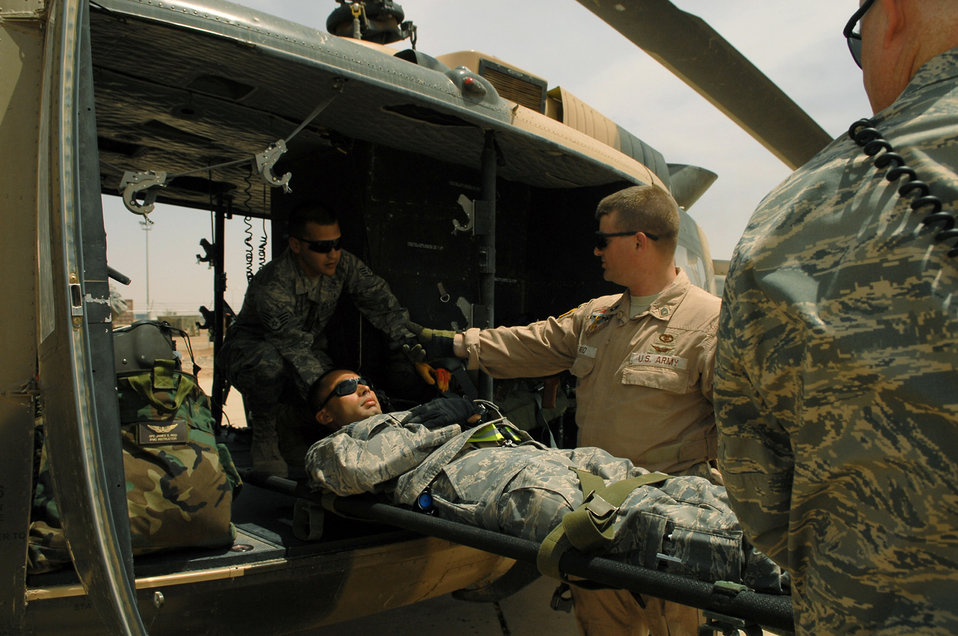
Iraqi air force performs medical evacuation

Army Sgt. 1st Class James Reid shows Airmen from the 332nd Expeditionary Medical Group the proper way to secure a trauma patient into an Iraqi air force Huey II May 14 at Balad Air Base, Iraq. The training took place just before the first Iraqi air force medical evacuation mission was flown from the Air Force Theater Hospital to the U.S. Army's 86th Combat Support Hospital in Baghdad. Sergeant Reid is a Coalition Air Forces Transition Team - Air Force Training School instructor.